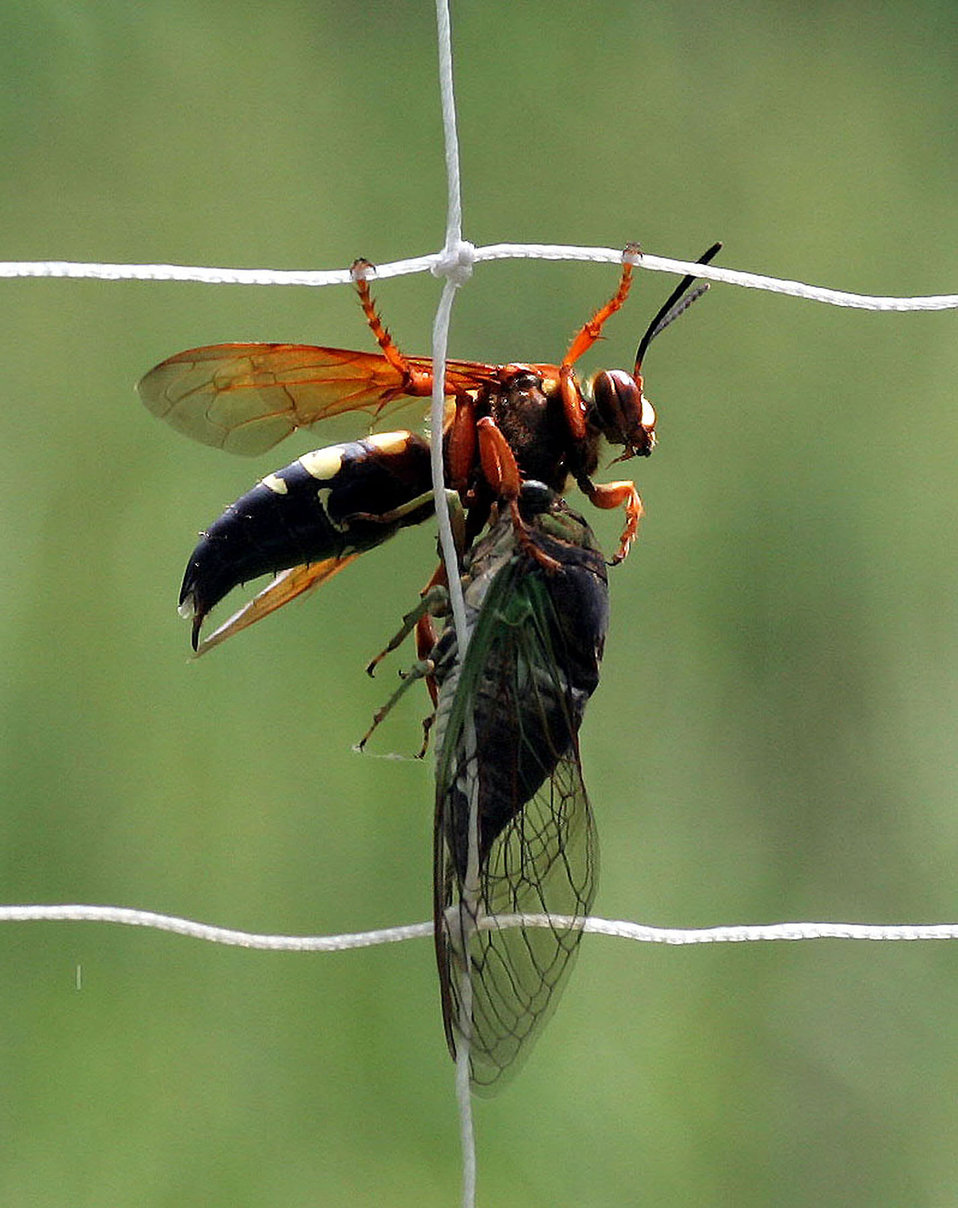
Ciccada killer wasp with ciccada

Cicada killer wasp and cicada at John Heinz National Wildlife Refuge in Philadelphia, Pennsylvania.